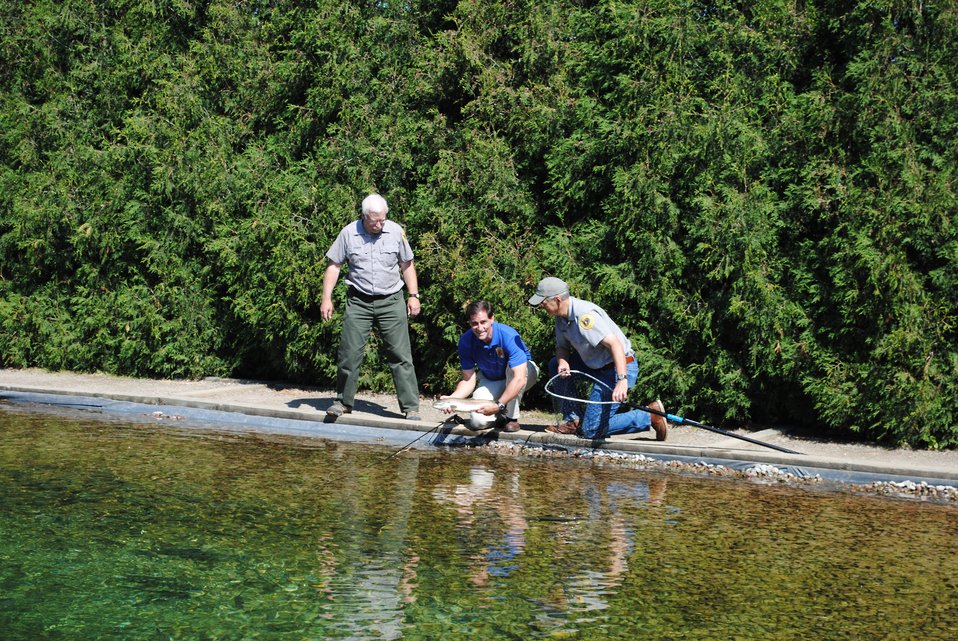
Director Dan Ashe Fishing

Montana Fish Wildlife and Parks Employees, Jim Vashro and Jim Satterfield, admire Director Dan Ashe's trout.